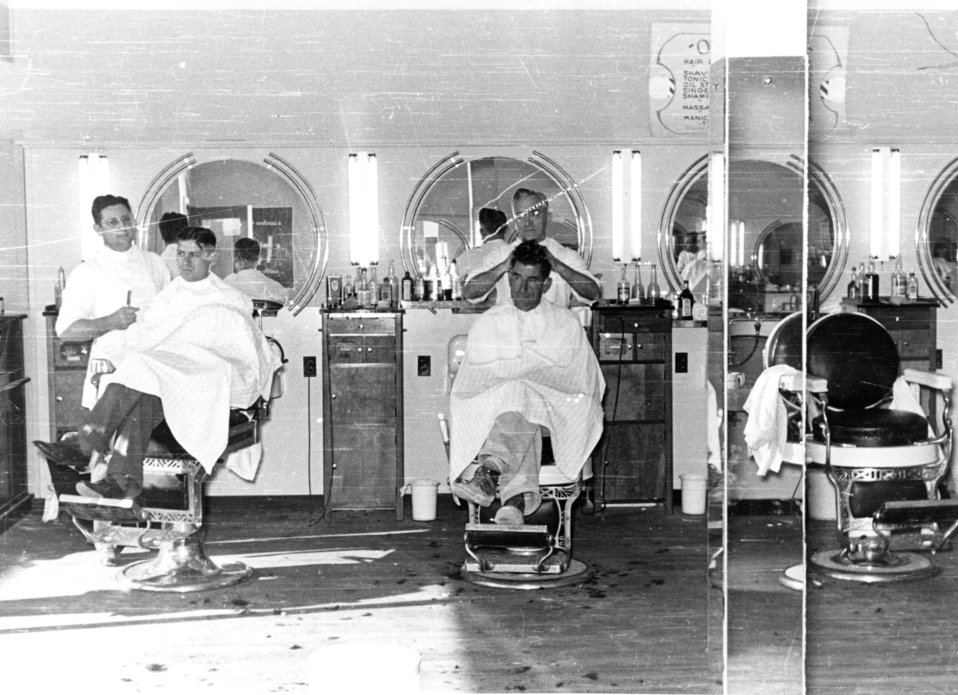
Business activity at Oak Ridge